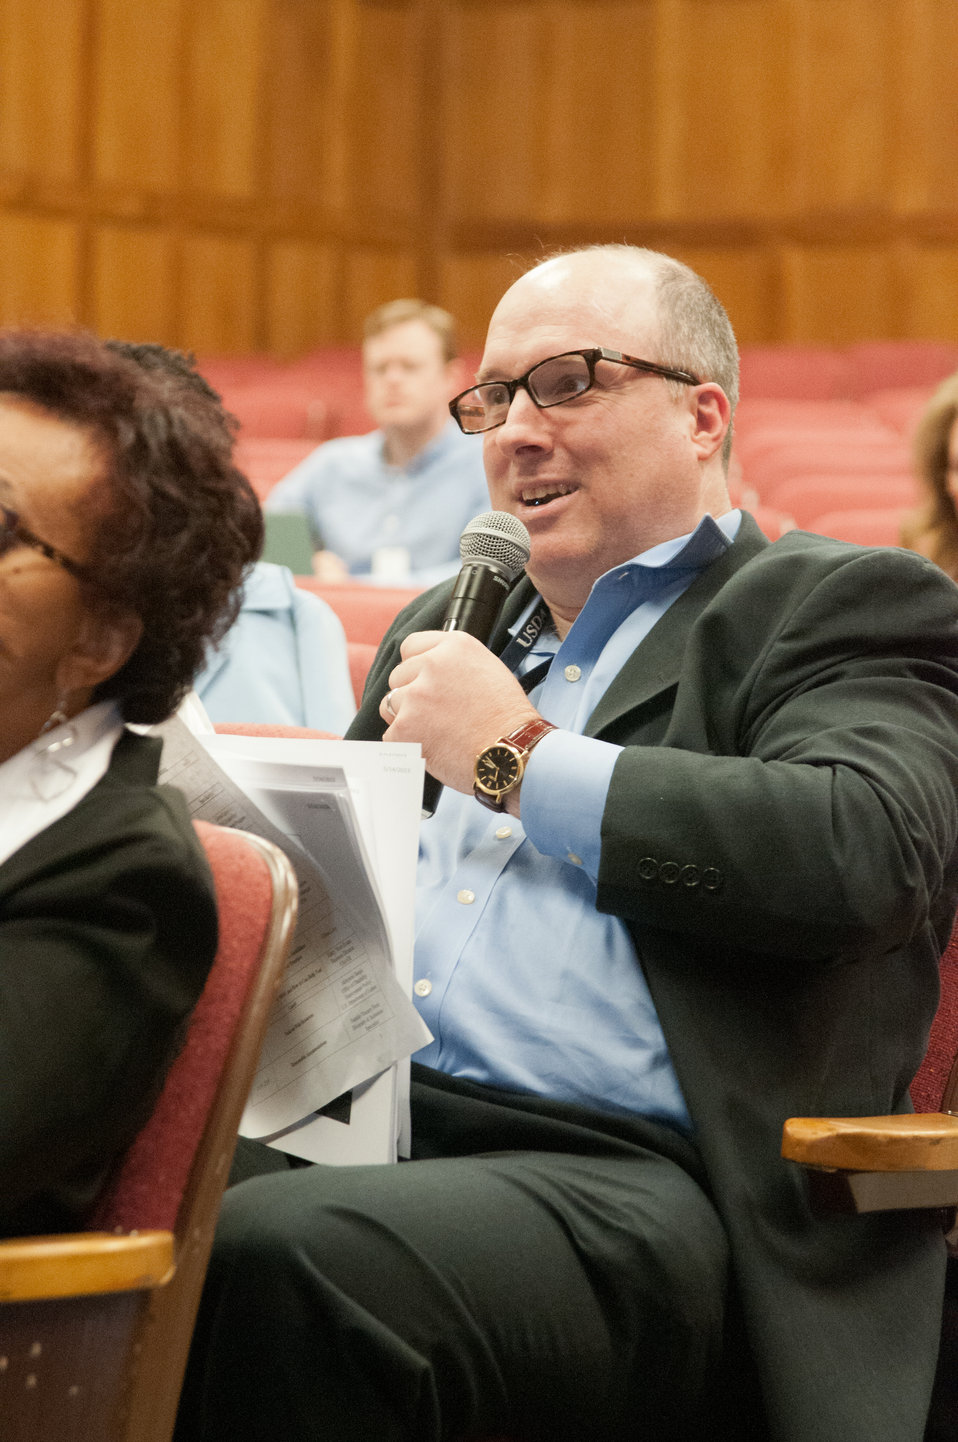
Dave Walton, Animal and Plant Health Inspection Service, Reasonable Accommodation Specialist asks a question about disability diversity and inclusion in the workforce during the United States Department of Agriculture, Office of Human Resources Management Disability Employment Program Team Training at USDA in Washington, DC, Tuesday, April 14, 2013.